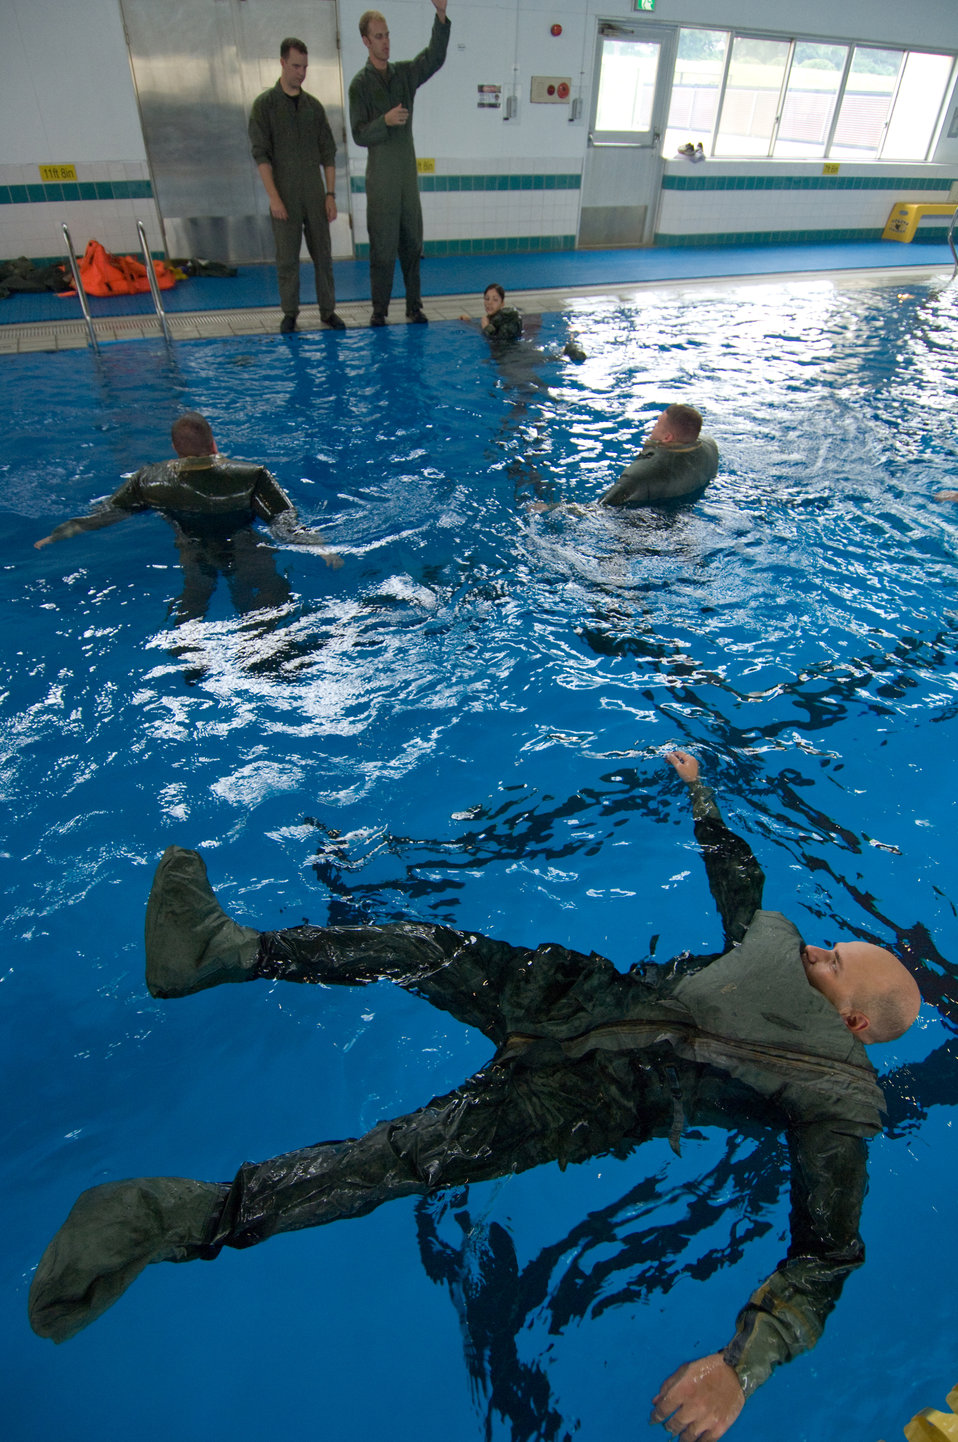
No easy day at the pool

Maj. Daniel Cordes (foreground) listens to instructions during water survival refresher training Sept. 8, 2009, at the natatorium indoor pool at Yokota Air Base, Japan. Survival, evasion, resistance and escape technicians teach the course to aircrew members at least once every three years. The training is especially important for Yokota aircrews, who routinely fly long distances over large bodies of water in the Pacific Rim. Major Cordes is with the 374th Airlift Wing's Inspector General office.